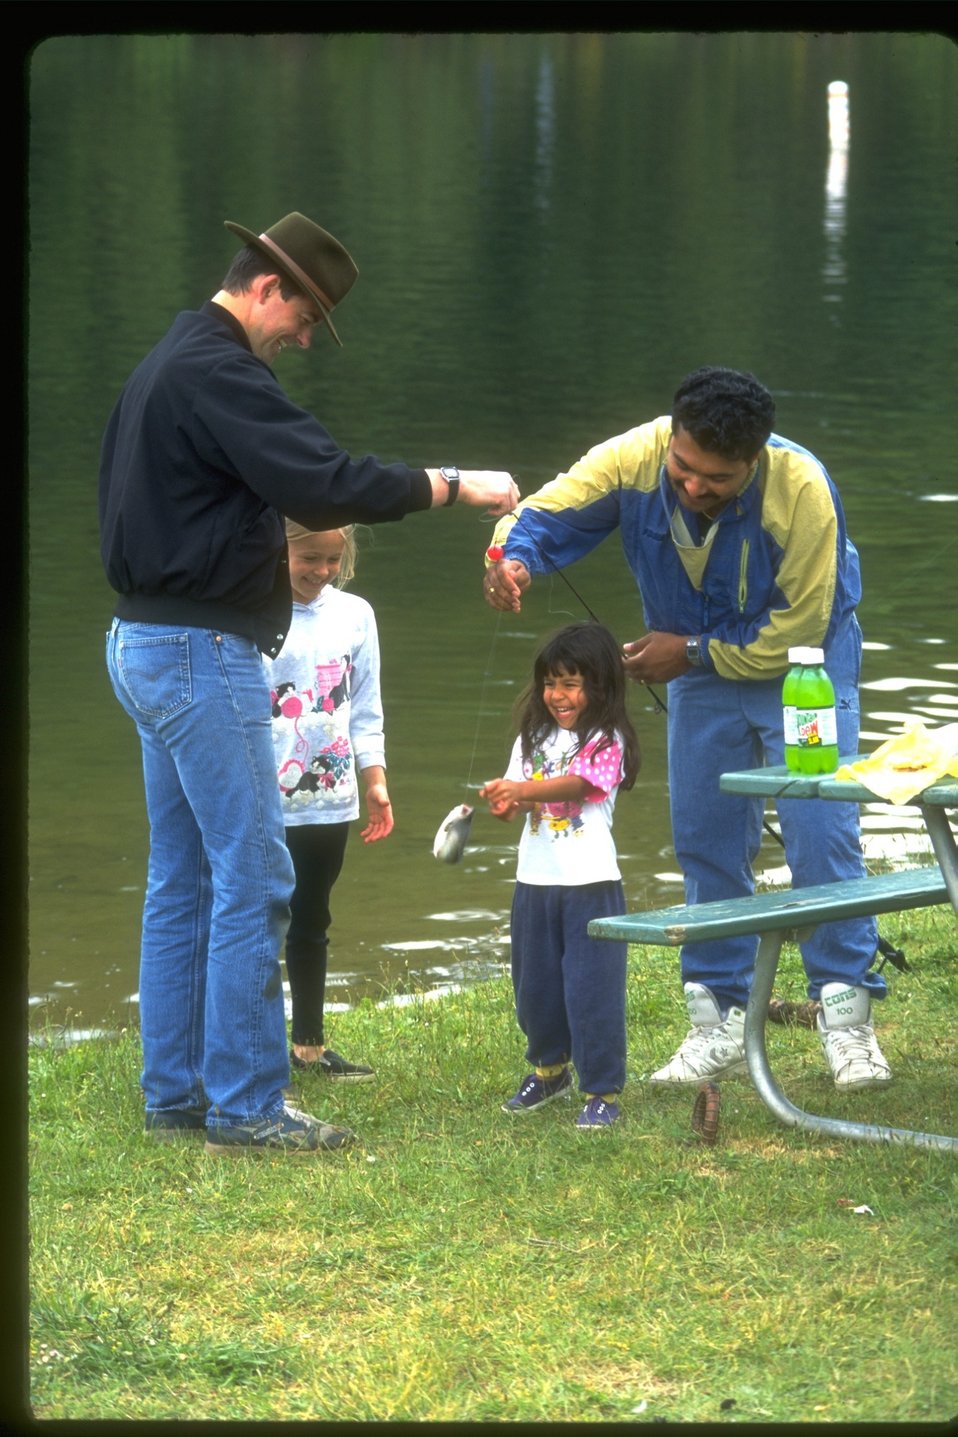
Family on fishing trip.